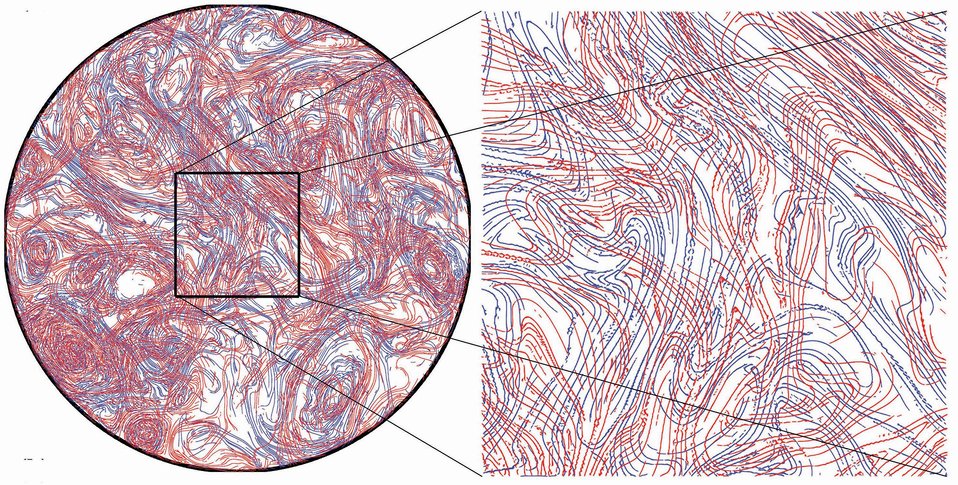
Depiction of turbulence

Above is a depiction of Lagrangian skeleton of turbulence approach in a flow experiment. Researchers believe the detection of these underlying structures will make it possible to forecast clear-air turbulence.